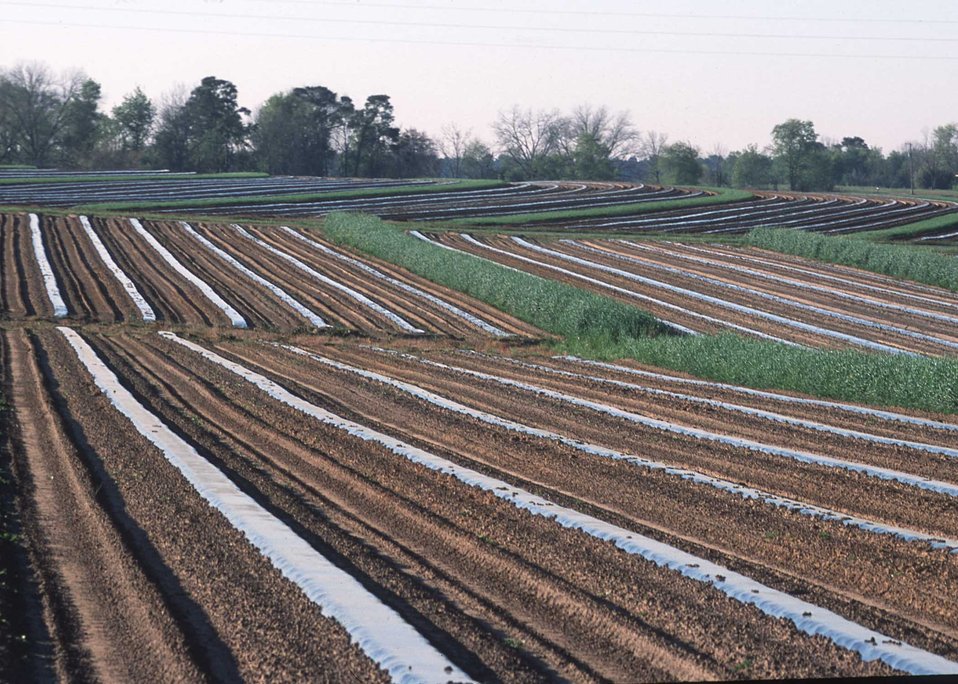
Contour farming, terraces and rye grass field strips. Tifton, GA.